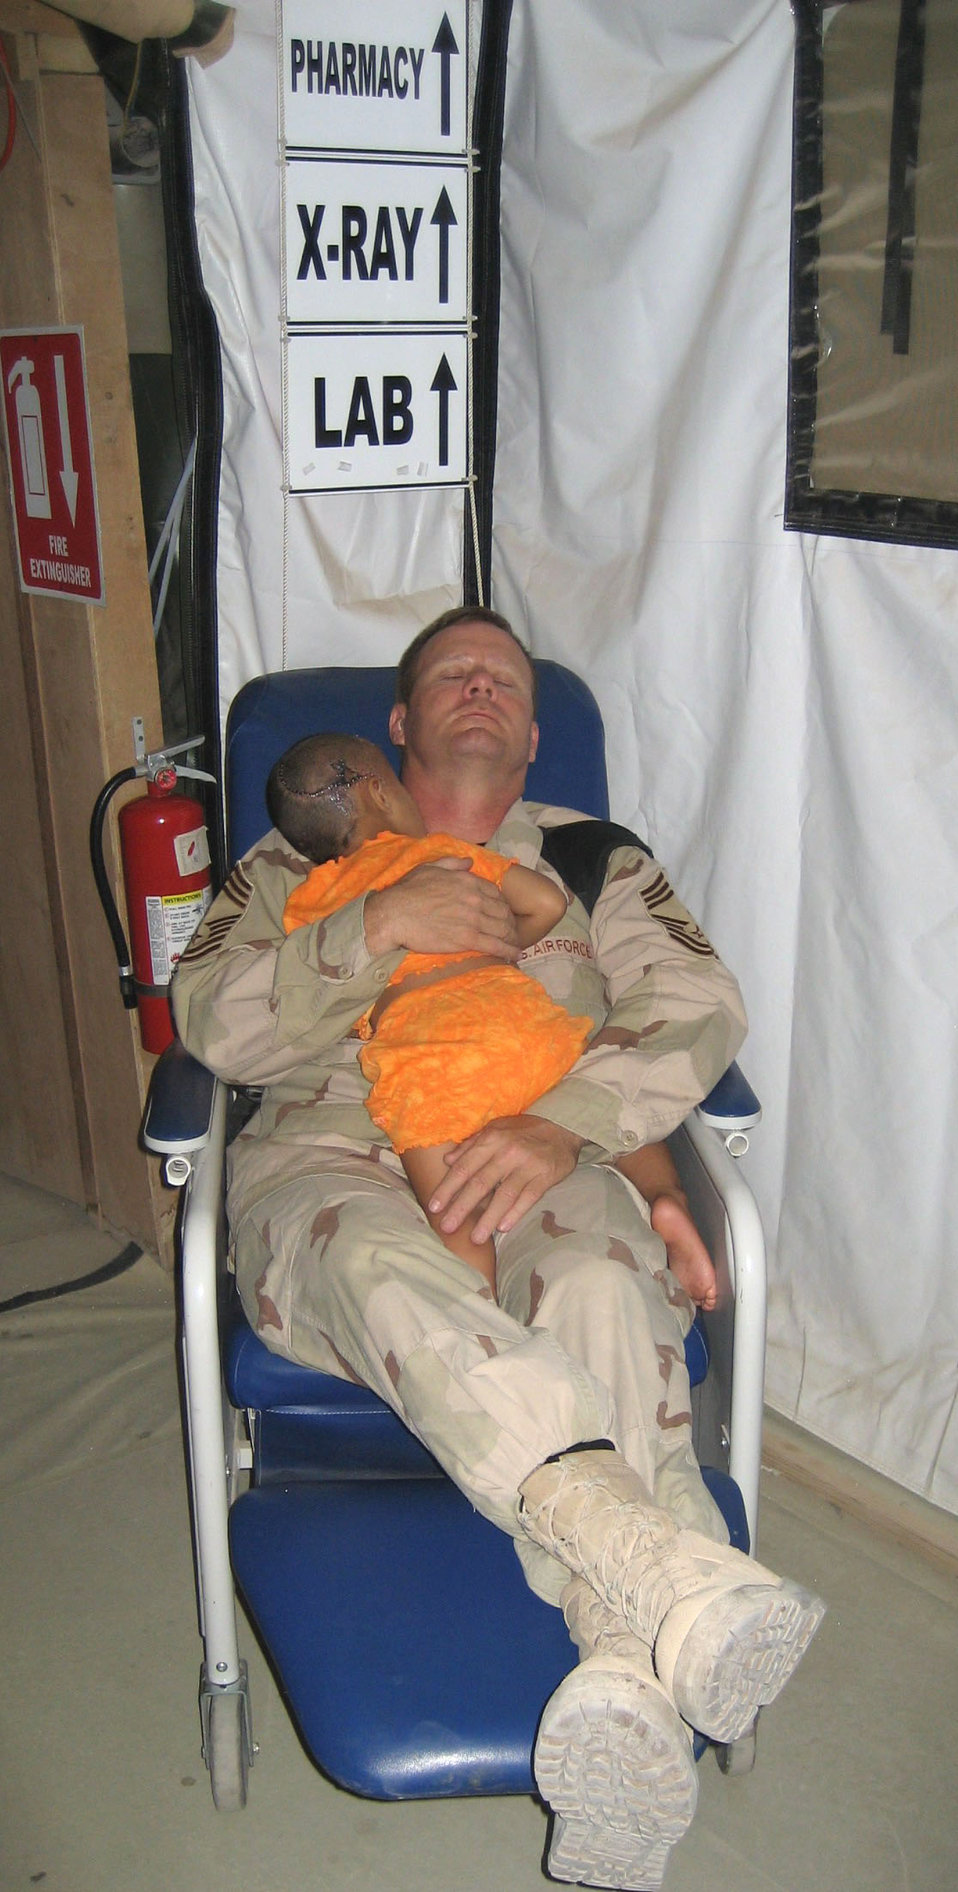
Compassion Chief

Chief Master Sgt. John Gebhardt cradles a young Iraqi girl as they both sleep in the hospital. The girl's entire family was executed by insurgents. The killers shot her in the head but she survived. The girl received treatment at the U.S. military hospital in Balad, but cries often. According to nurses at the facility, Chief Gebhardt is the only one who can calm down the girl, so he holds her at night while they both sleep in a chair. Chief Gebhardt was assigned to the 332nd Expeditionary Medical Group at Balad Air Base, Iraq.